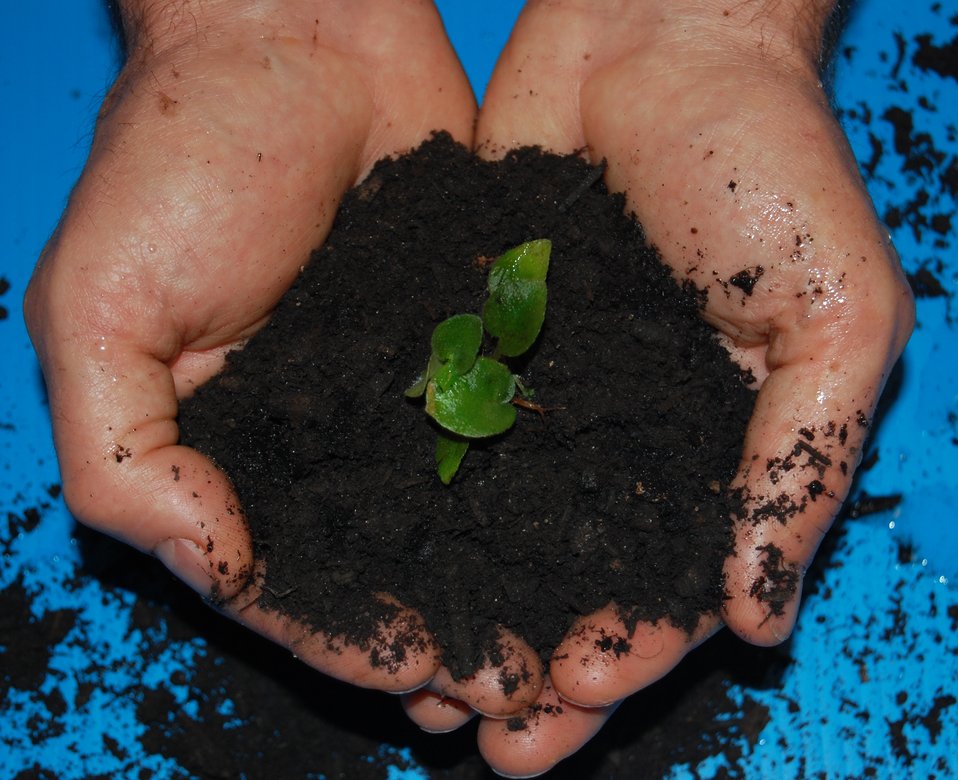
Composting Creates A Natural Fertilizer

Of the less than 3% of food scraps diverted from the waste stream, composting is the prominent diversion method. Composting, either in your backyard or in a commercial facility, creates a natural fertilizer with many beneficial qualities.